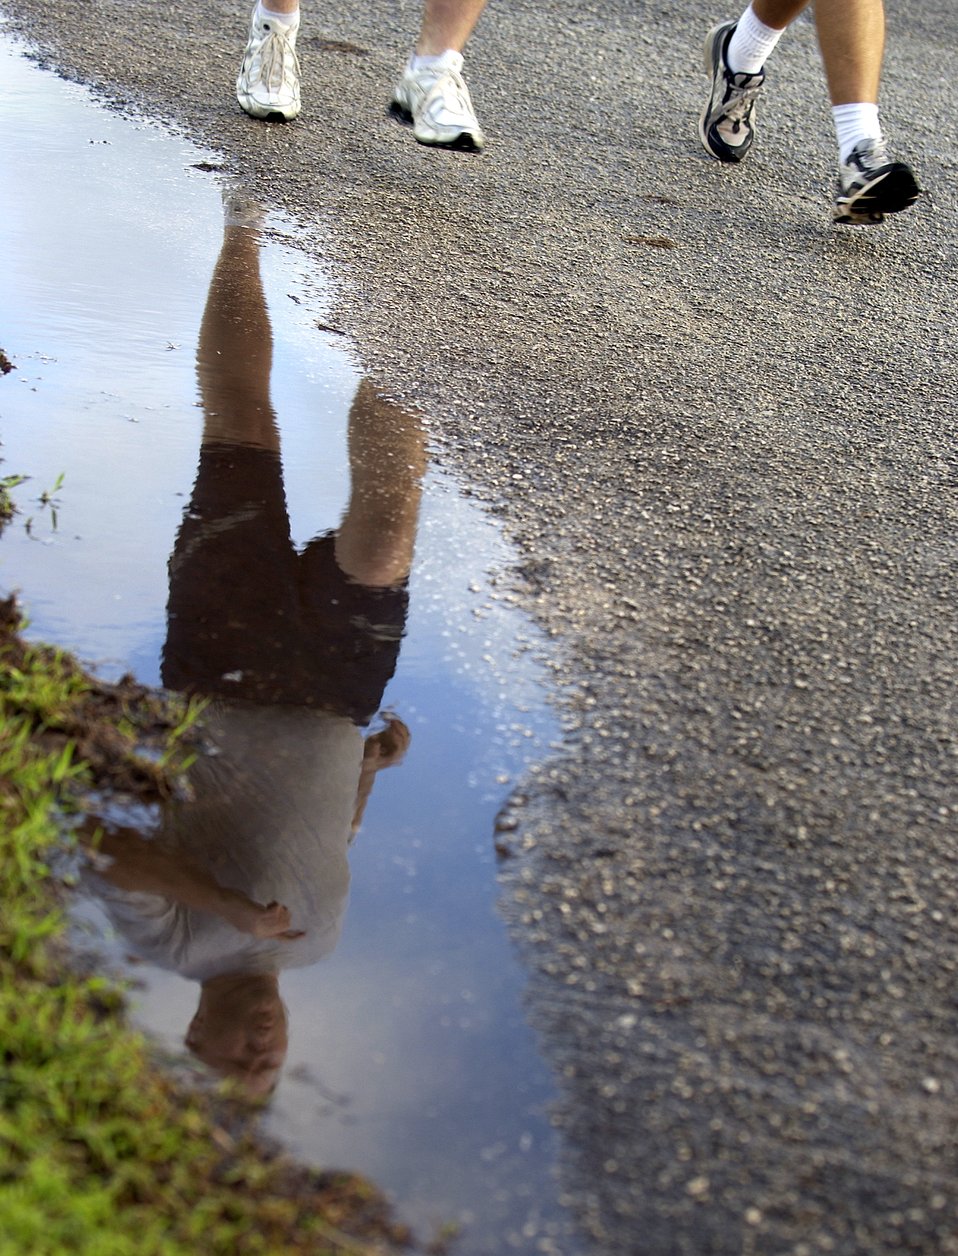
Reflection

An Airman catches a reflection of himself in a pool of water during a wing run Nov. 21 at Andersen Air Force Base, Guam.